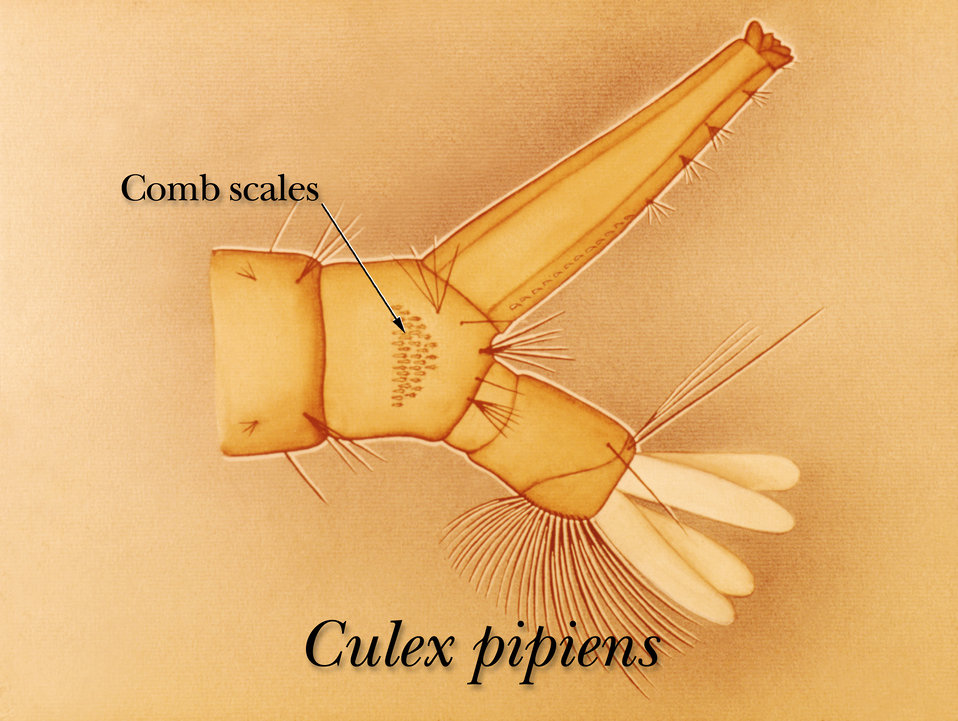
An illustration identifying the comb scales on the terminal segment of a Culex pipiens mosquito larva.